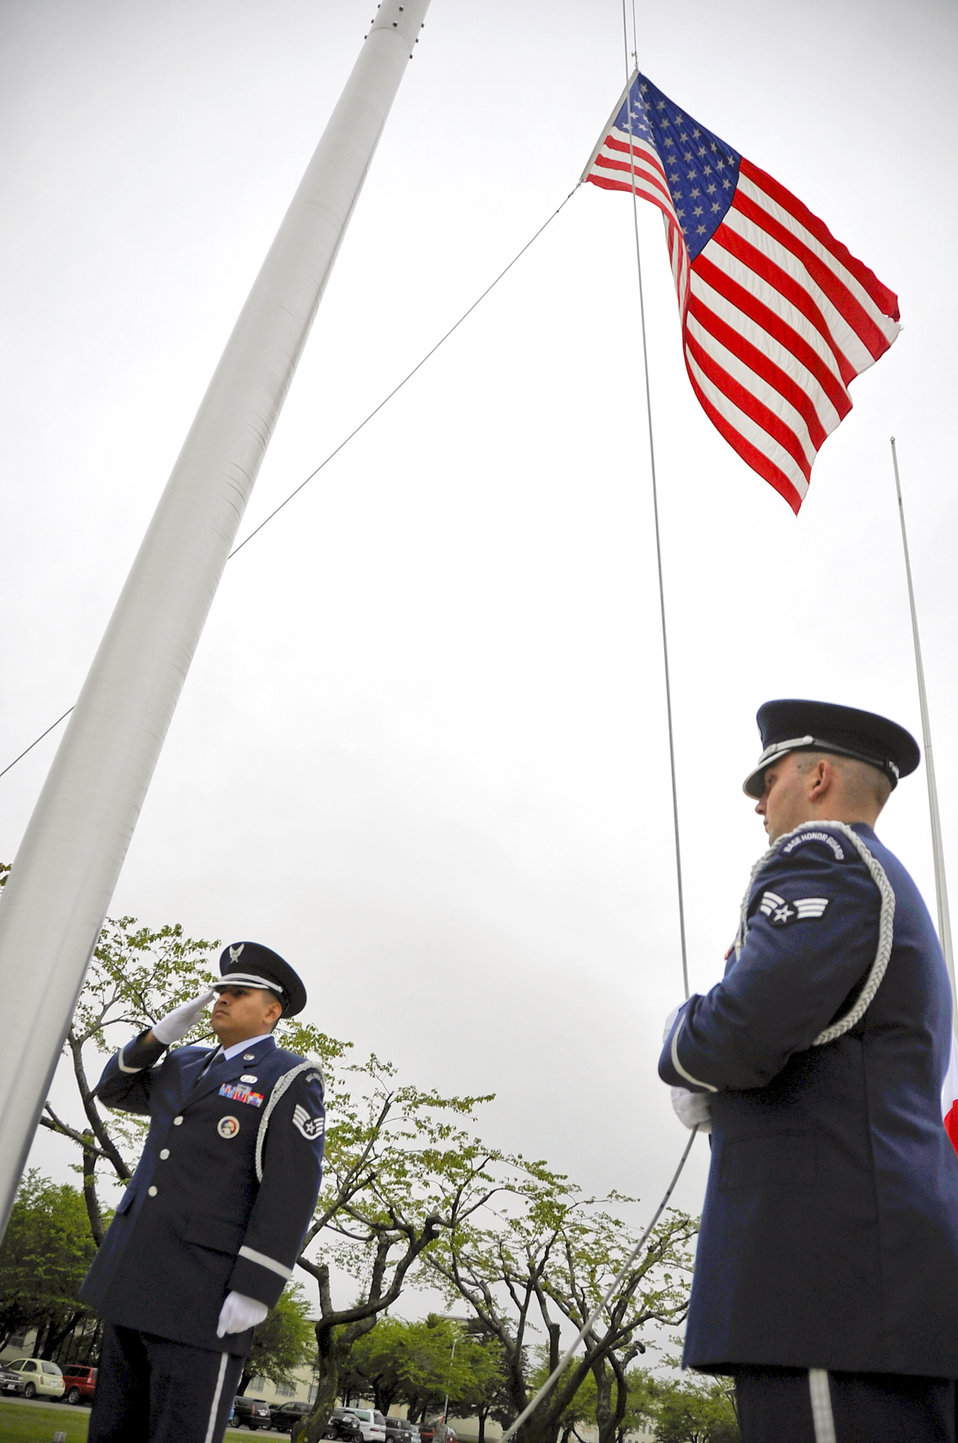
Misawa AB community gathers for Memorial Day retreat

Senior Airman Arnold Appel lowers the flag as Staff Sgt. Juan Rodriguez renders a salute during the Memorial Day retreat ceremony May 27, 2010, at Misawa Air Base, Japan. The base honor guard members performed in front of more than 200 people.